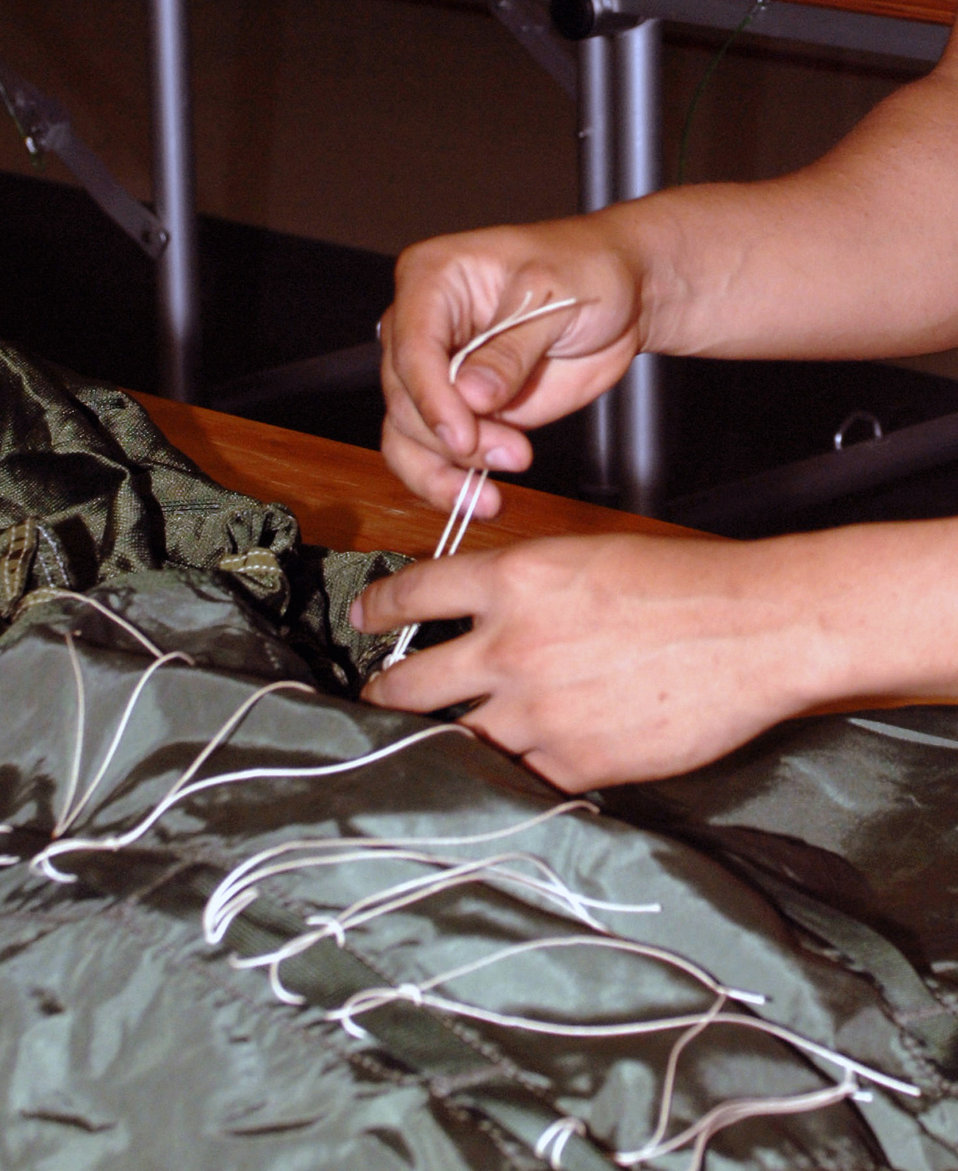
Cannon Airmen train for special operations forces resupply

Airman 1st Class Raul Hernandez applies tension to and squares the lines on a 22-foot extraction chute. Aerial delivery training is performed at least weekly at Cannon Air Force Base, N.M. It prepares the aircrew for resupply missions for special operations forces when an airfield cannot be used. Airman Hernandez is assigned to the 27th Special Operations Logistics Readiness Squadron.